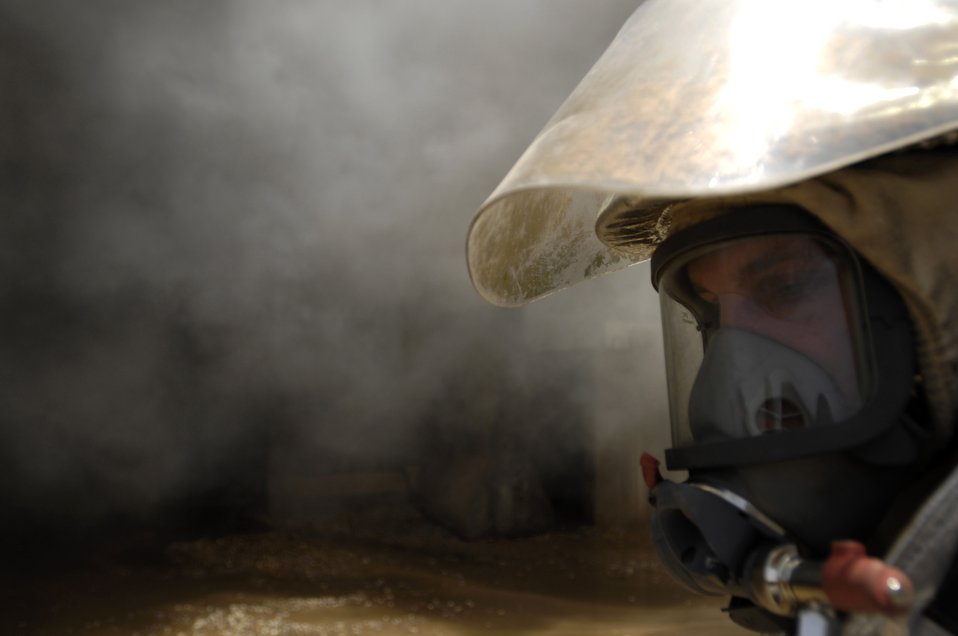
Where there's smoke...

At Joint Base Balad, Iraq, on July 22, Airman 1st Class Derek Thostenson prepares to fight a two-alarm fire. Air Force and Army firefighters limited the damages to six closely situated buildings.